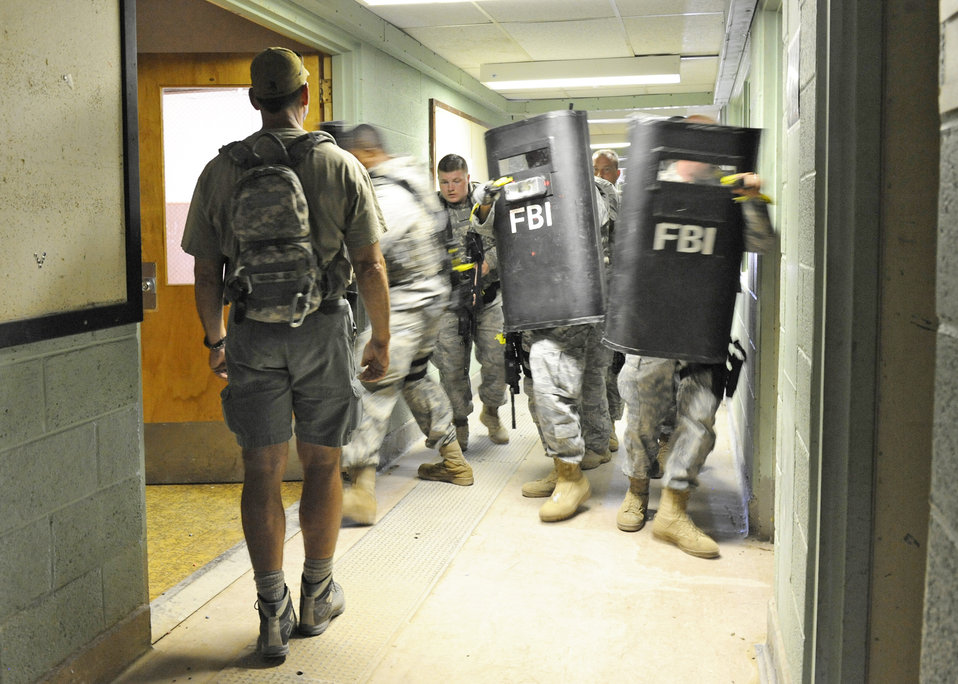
Holloman defenders train with FBI

Special Agent Raymond Gonzales oversees members of the 49th Security Forces Squadron as they practice close-quarter battle and ballistic shield work during training Aug. 6, 2010, at Holloman Air Force Base, N.M. Members of the FBI helped Holloman AFB Airmen practice techniques that could be used in a real-world crisis situation. Agent Gonzales is a training coordinator with the Federal Bureau of Investigation, Albuquerque division.